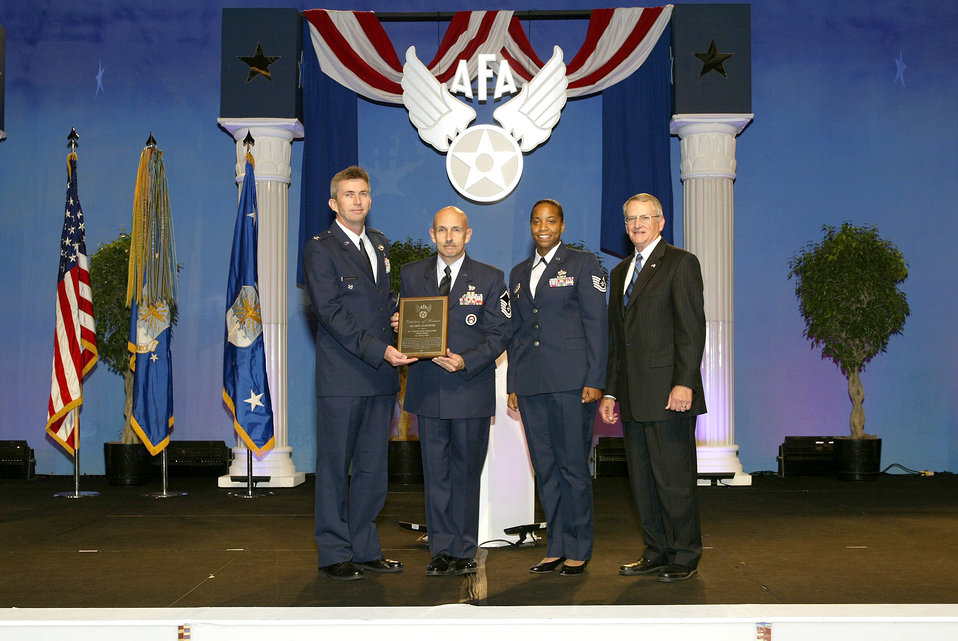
Honor Guard wins Citation of Honor

WASHINGTON -- The 301st Fighter Wing Honor Guard from Carswell Air Reserve Station, Texas, received the Air Force Association's Citation of Honor for outstanding contribution by an organization to the development of aerospace power for the betterment of mankind. (left to right) Col. Bill Schauffert, wing vice commander, Master Sgt. Ross Wood, the honor guard superintendent, Tech. Sgt. Udrika Baldwin, honor guard member and Stephen Condon, AFA Chairman of the Board, were at the annual AFA awards ceremony here.